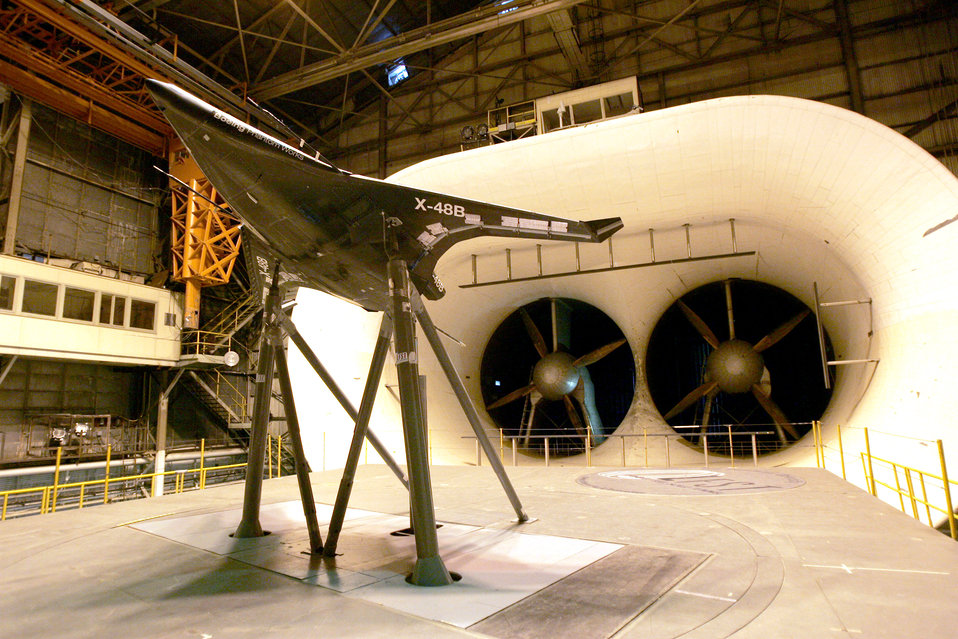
Research lab tests fuel-efficient, flying-wing aircraft

Researchers are testing a 21-foot wingspan prototype of the X-48B, a blended wing body aircraft, at the full scale wind tunnel at NASA's research center at Langley Air Force Base, Va. The Air Force Research Laboratory partnered with Boeing Phantom Works and the National Aeronautics and Space Administration to study the structural, aerodynamic and operational advantages of the advanced aircraft concept.